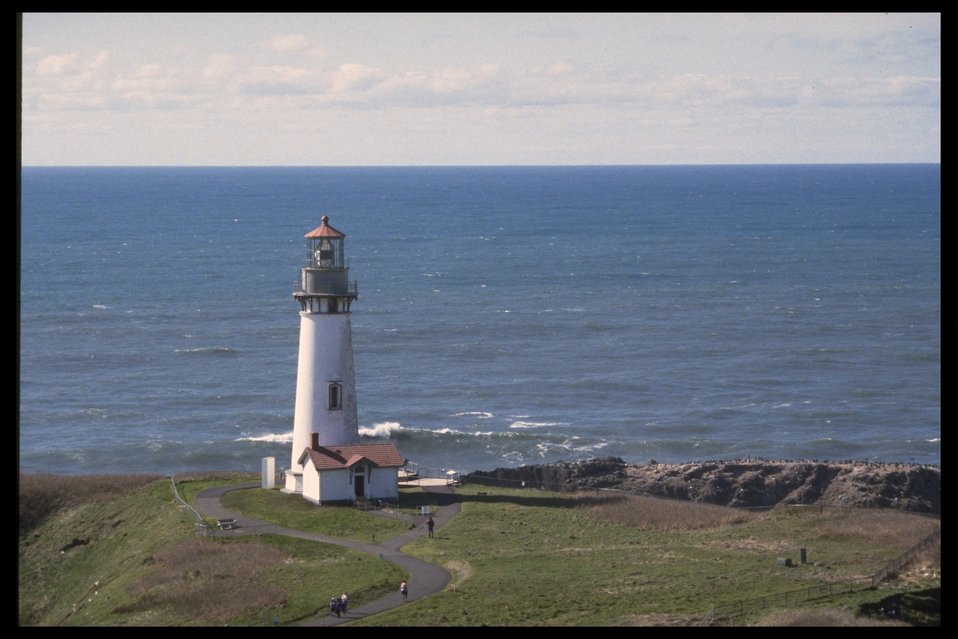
Yaquina Head Lighthouse.